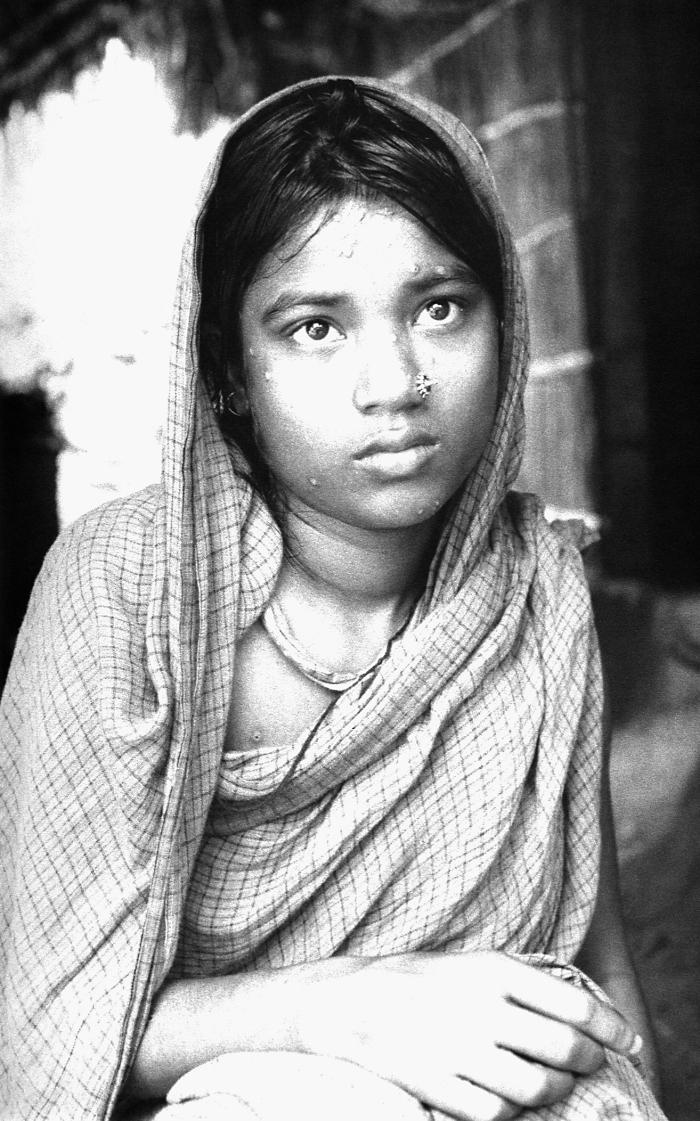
The skin of this young Bangladesh woman revealed the scarring that remained after having survived a case of smallpox. The characteristic maculopapular rash that manifests from smallpox is usually dispersed so that it is most dense on the face and extremities, which includes the palms of the hands, and soles of the feet.